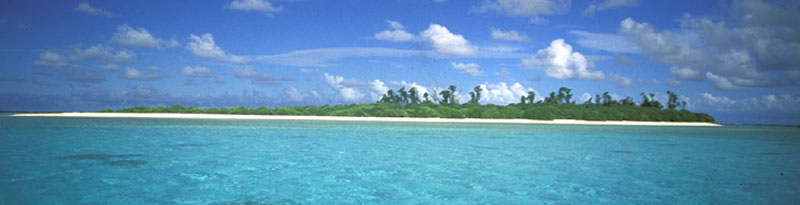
Rose Islet - Rose Atoll NWR

Rose Islet is an important nesting site for the threatened green turtle in American Samoa.